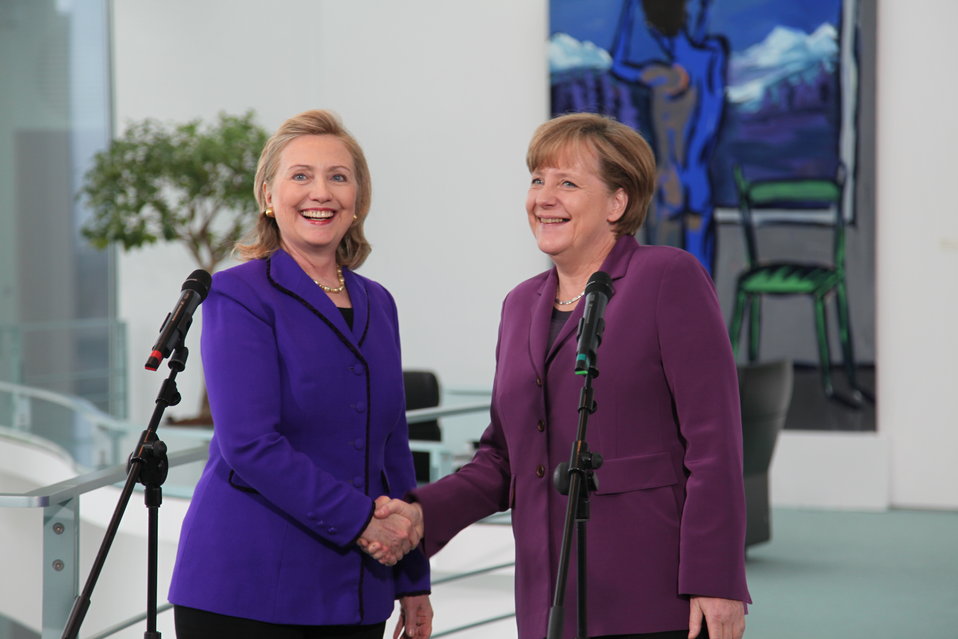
Secretary Clinton Is Welcomed By German Chancellor Merkel

U.S. Secretary of State Hillary Rodham Clinton is welcomed by German Chancellor Angela Merkel at the Federal Chancellery in Berlin, Germany, on April 14, 2011.